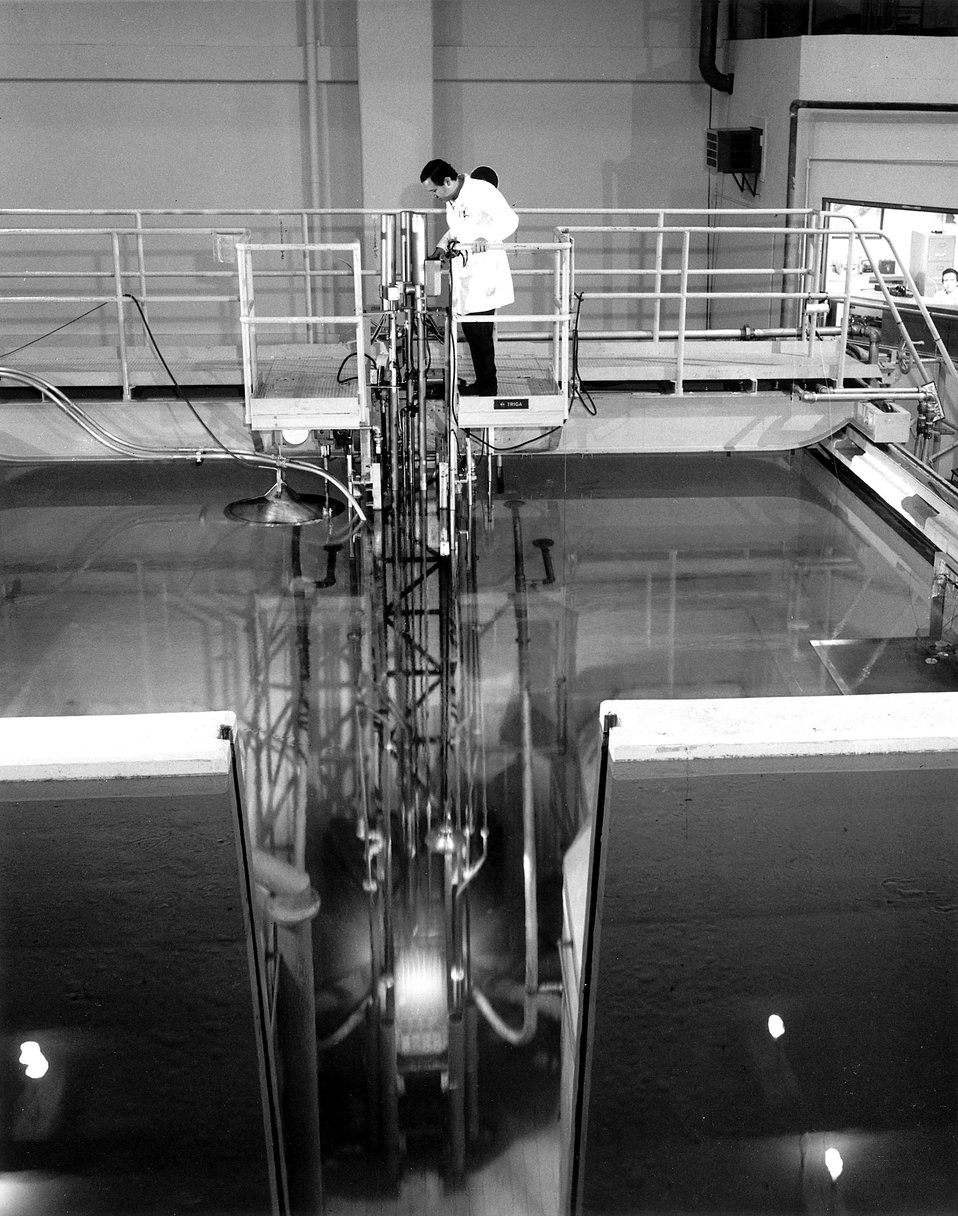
A radar drogue, ca-placed in the Bay of Jabos in southern Puerto Rico by researchers at the Atomic Energy Commission's Puerto Rico Nuclear Center, is pulled through the water by the force of the Bay's currents on a parachute connected to the drogue. Circa 1972.